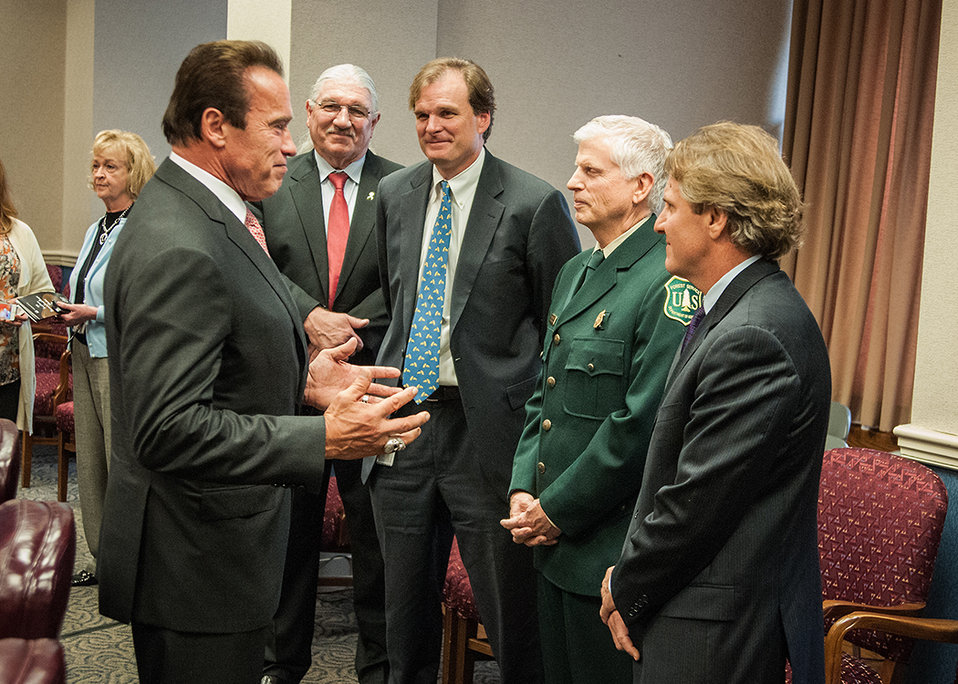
From left: Governor Arnold Schwarzenegger, Butch Blazer, Deputy Under Secretary, Natural Resources and Environment, Robert Bonnie, Under Secretary, Natural Resources and Environment, U.S. Forest Service Chief Tom Tidwell and Leo Kaye, Director, U.S. Forest Service, Office of Communications greet prior to an event honoring Gov. Schwarzenegger as an honorary Forest Ranger held at the U.S. Department of Agriculture in Washington, D.C. Wed., Oct. 29, 2013. Gov. Schwarzenegger is being honored for his continued leadership on climate change since leaving office.